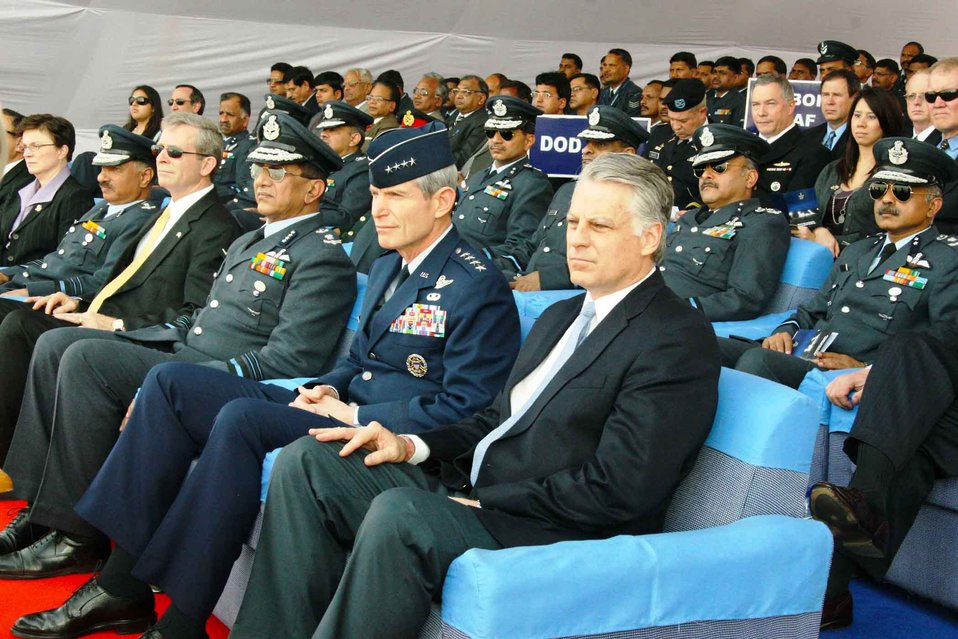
CSAF helps Indian Air Force welcome C-130J

Air Force Chief of Staff Gen. Norton Schwartz sits with U.S. Ambassador to India Timothy J. Roemer (right) during the C-130J Super Hercules induction ceremony Feb. 5, 2011, at Hindon Air Force Station near New Delhi, India. The Indian Air Force inducted the first of six C-130Js aircraft into its mobility fleet.